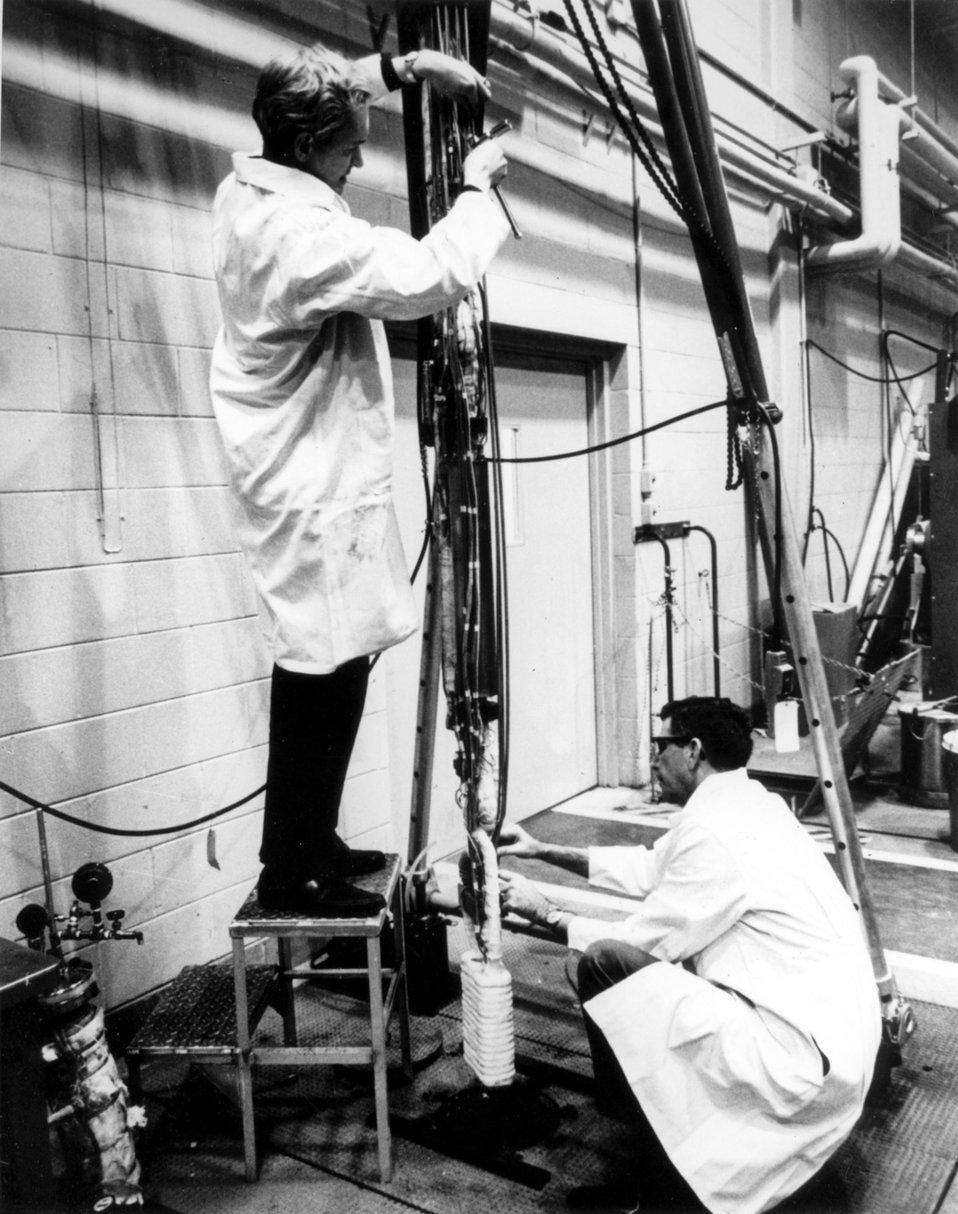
The Mark II Packaged Sodium Loop under construction at Argonne. c.1970